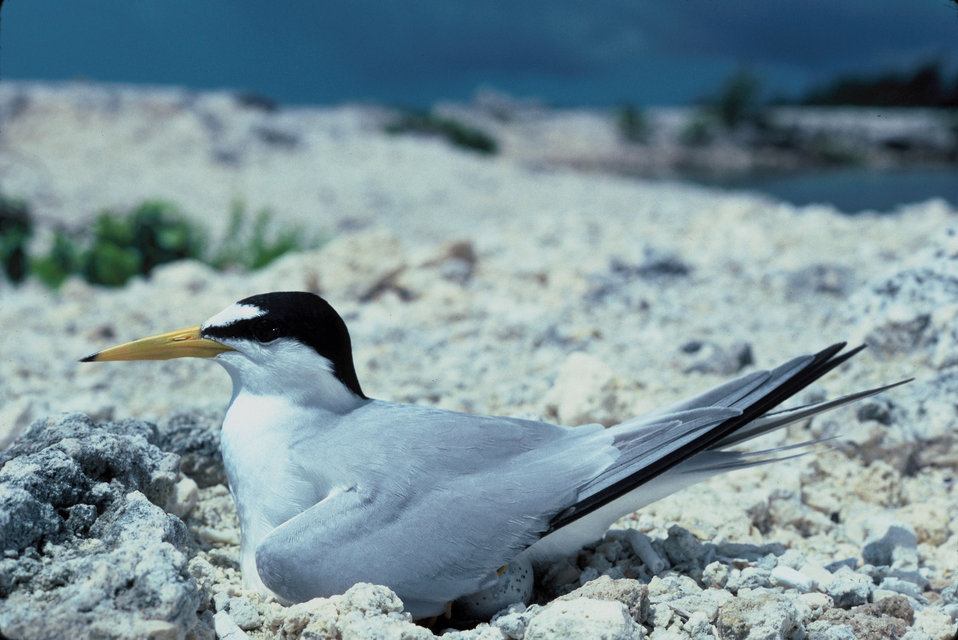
Least Tern

The least tern is just one of the species at Blackwater National Wildlife Refuge that could be affected by climate change and sea level rise.